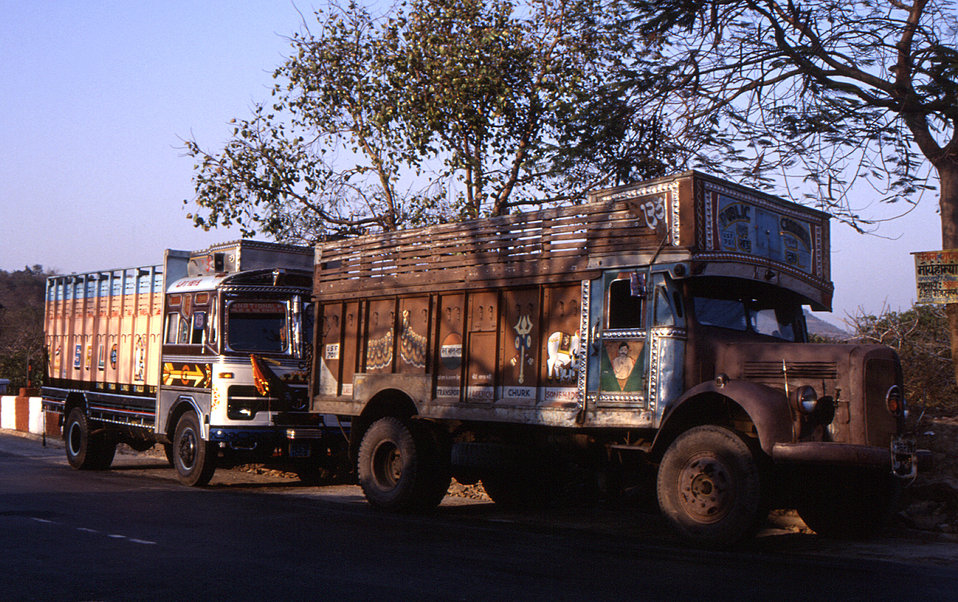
This 2000 photograph depicted two large trucks, the likes of which are often seen driving along the roadways of India. These two vehicles were on the road in Uttar Pradesh, and though their contents, is not known, many carry sugar cane to local refineries. This was one of a number of images provided by Chris Zahniser, B.S.N., R.N., M.P.H., a STOP Transmission of Polio (STOP) immunization initiative team member and photographer who was assigned to the state of Uttar Pradesh in northern India, and spent three months working in the Districts of Gorakhpur and Deoria.